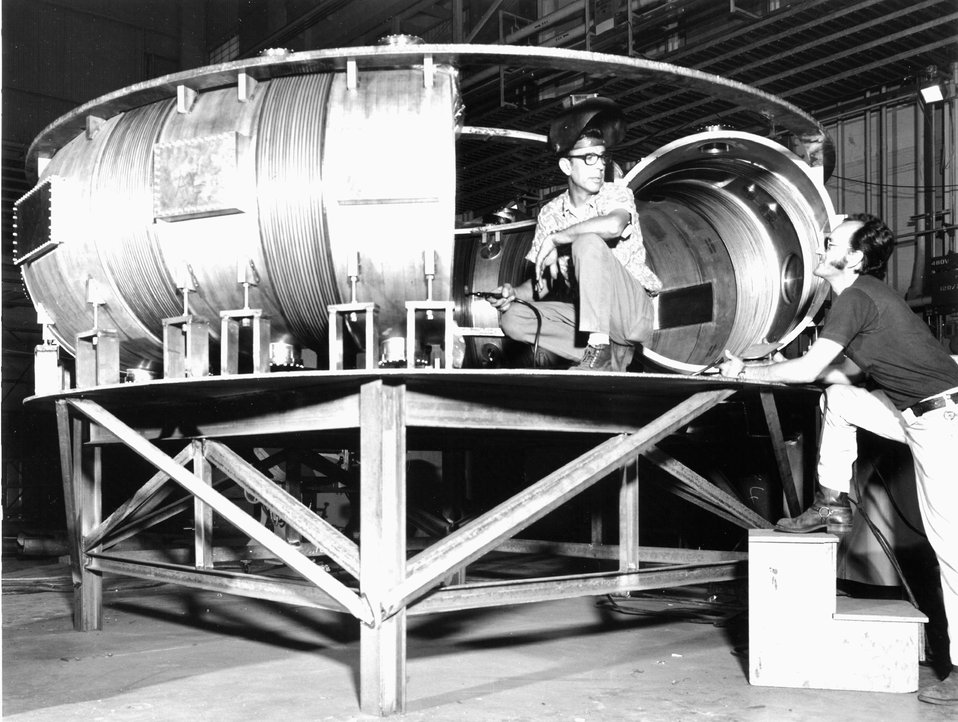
The Princeton Large Torus will test confinement scaling with size and current. Shown is the vacuum vessel for the device under construction at Princeton. c. undated